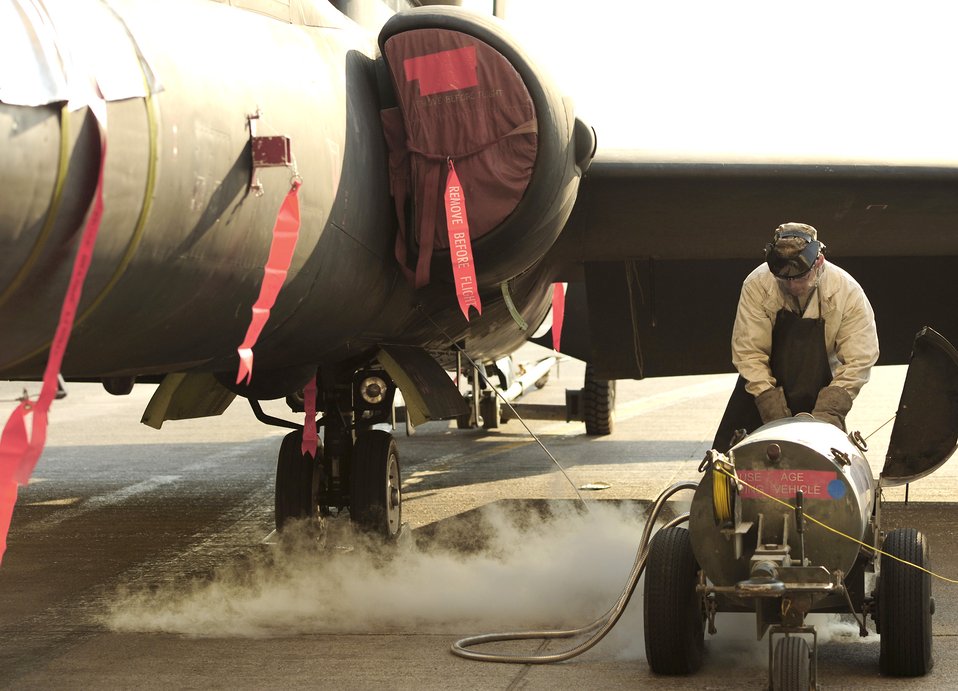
Technicians work on the Dragon Lady

Airman 1st Class Edgar Alcaraz fills the U-2 Dragon Lady with liquid oxygen during post flight checks and inspections Nov. 23, 2010, at an air base in Southwest Asia. Airman Alcaraz is a U-2 crew chief assigned to the 380th Expeditionary Aircraft Maintenance Squadron.